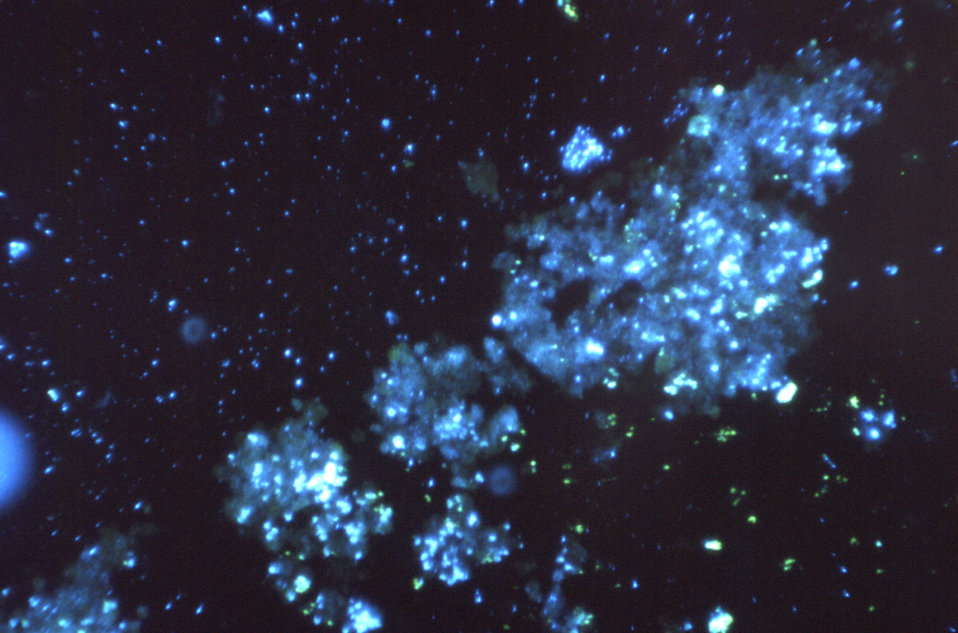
Magnified 125X, "digested", then stained using a fluorescent antibody-staining technique, this photomicrograph reveals the presence of Histoplasma capsulatum antigens in this human lung tissue specimen.